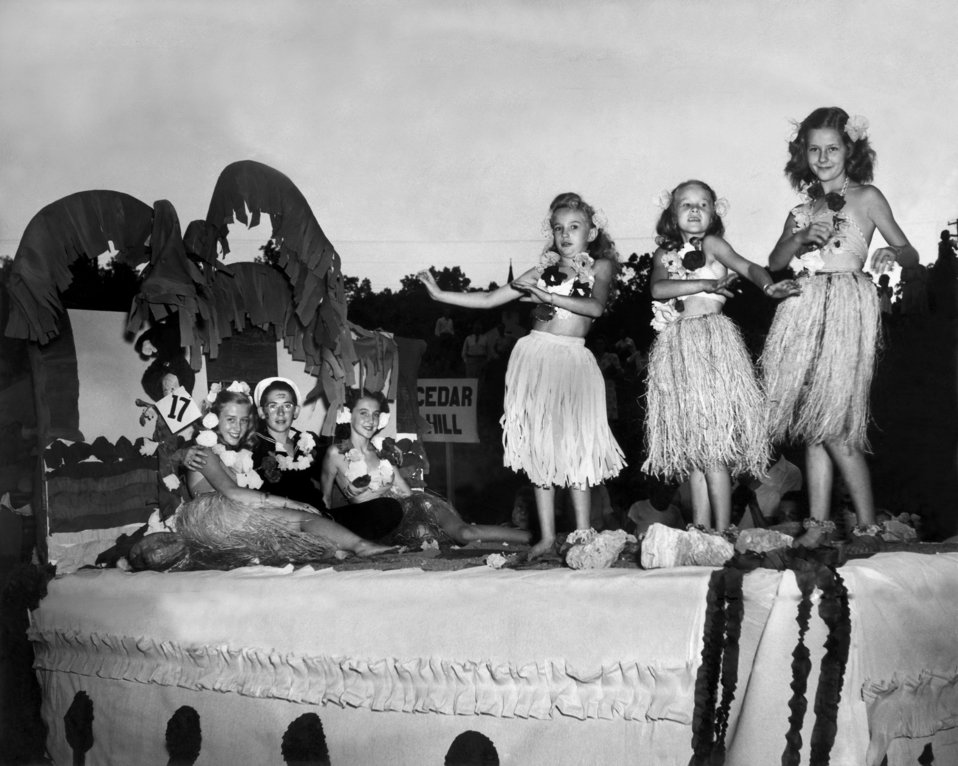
Parade float Oak Ridge

322-18 DOE photo by Ed Westcott

Parade float Oak Ridge Tennessee 1940s